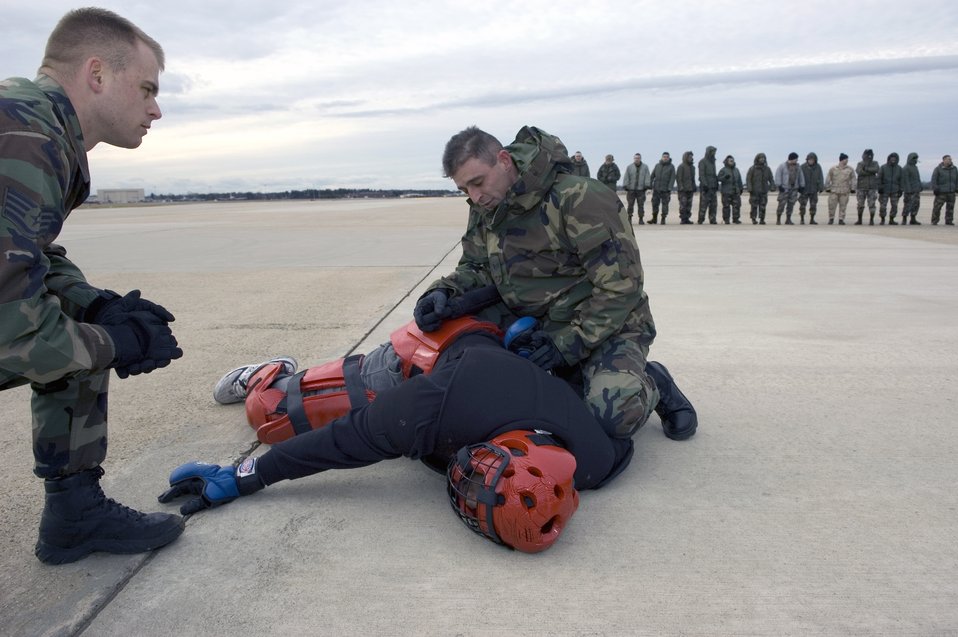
Security forces Airmen complete 'Fly Away' course at Fort Dix

Staff Sgt. Jason Taylor oversees a student subduing an intruder during anti-hijacking training as part of the Fly Away Security Training Course 07-1 Jan. 16 at McGuire Air Force Base, N.J. Sergeant Taylor is an instructor with the 421st Combat Training Squadron of the Air Mobility Warfare Center at Fort Dix, N.J. This was the first FAST course taught by the AMWC to prepare the students prior to their departure for deployment to Iraq.